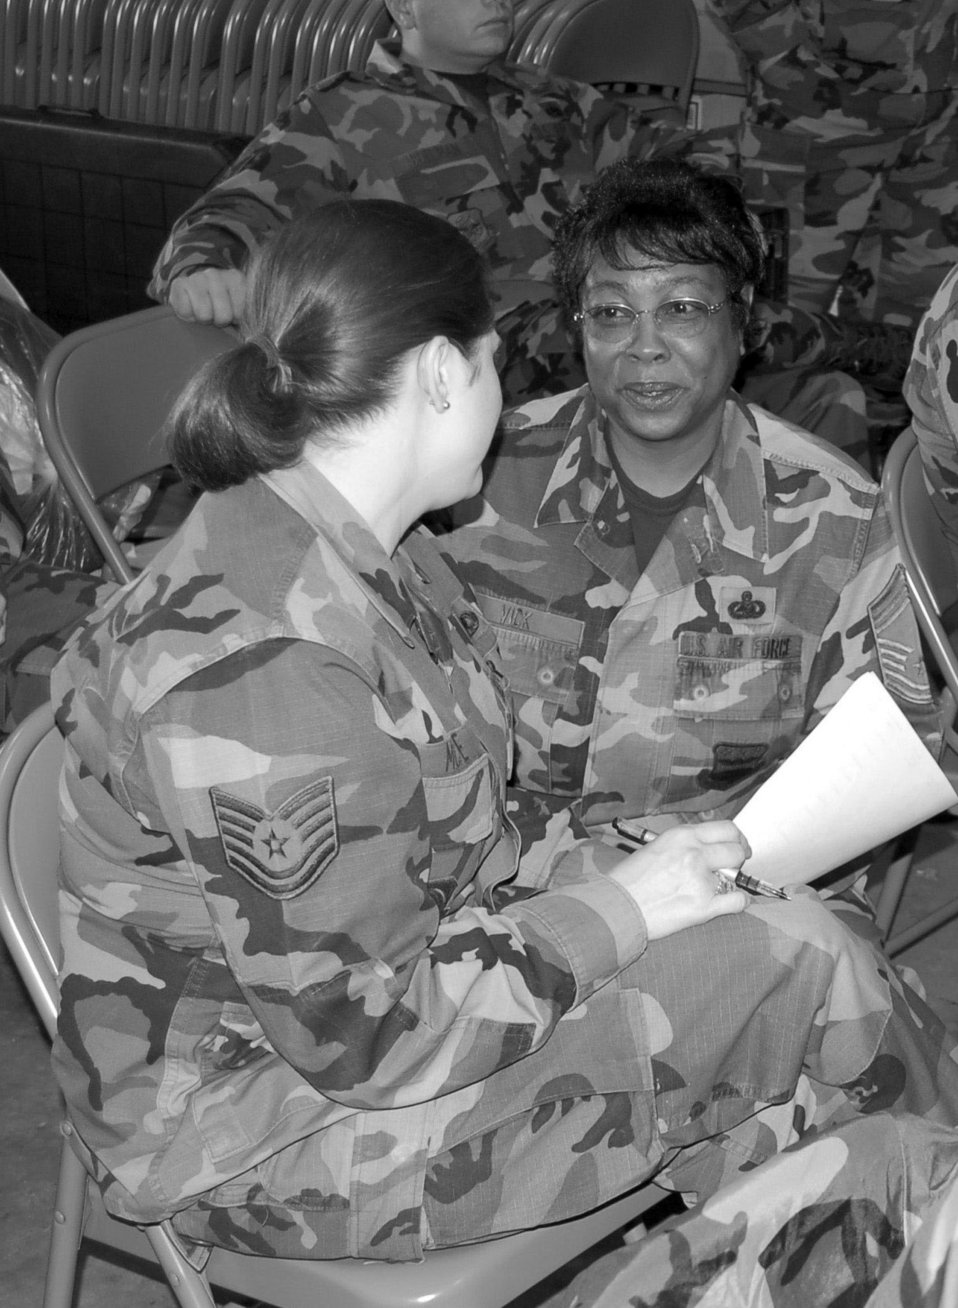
Chief makes history, home at 433rd AW

LACKLAND AIR FORCE BASE, Texas (AFPN) -- Chief Master Sgt. Laverne Vick speaks with an Airman with the 433rd Airlift Wing. The chief has been with the wing her entire 28 years as an Air Force Reservist.